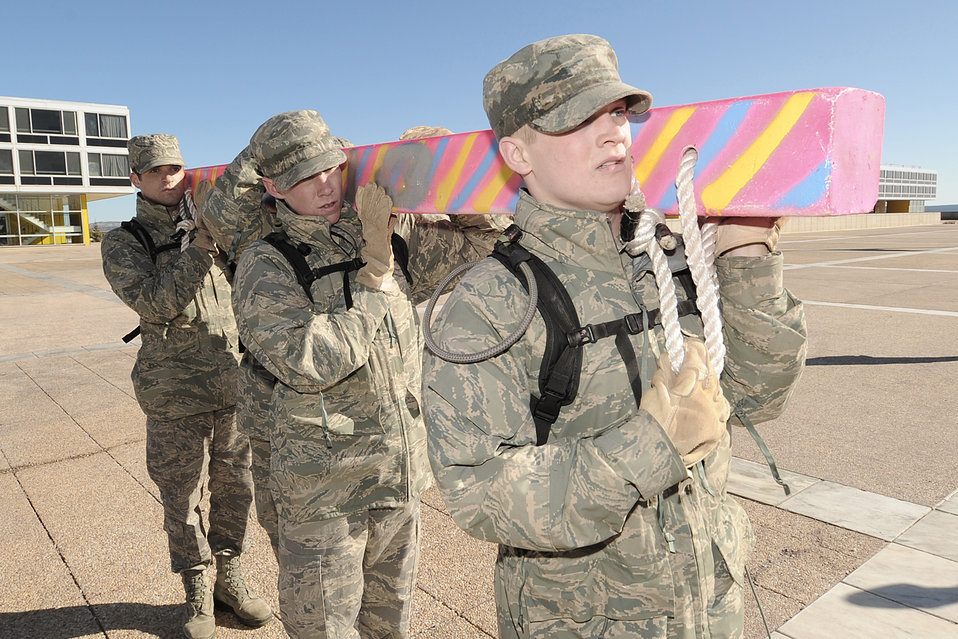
Recognition Days

Cadet freshmen Ben Register, Kevin Dwyer, Evan Barger and Hank Binzer of Cadet Squadron 33 shoulder the weight of their Squadron's charge and await instructions March 12, 2010 at the U.S. Air Force Academy in Colorado. Recognition is an annual set of events that culminate in the freshmen being welcomed into the ranks of the upper class cadets.